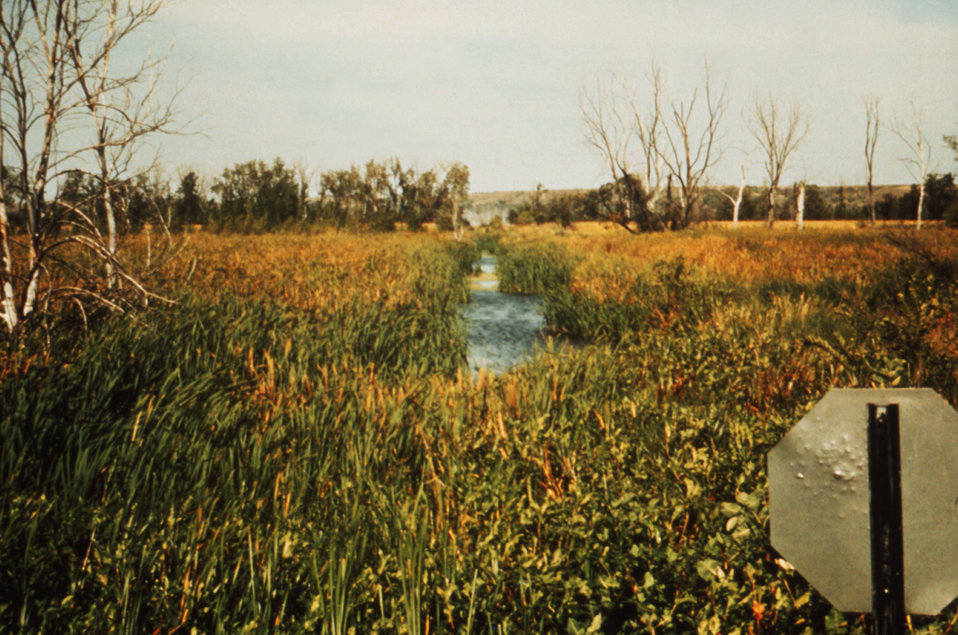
This 1976 photograph shows a drainage ditch (Cntr) surrounded by cattails at Lewis and Clark Lake in Nebraska.